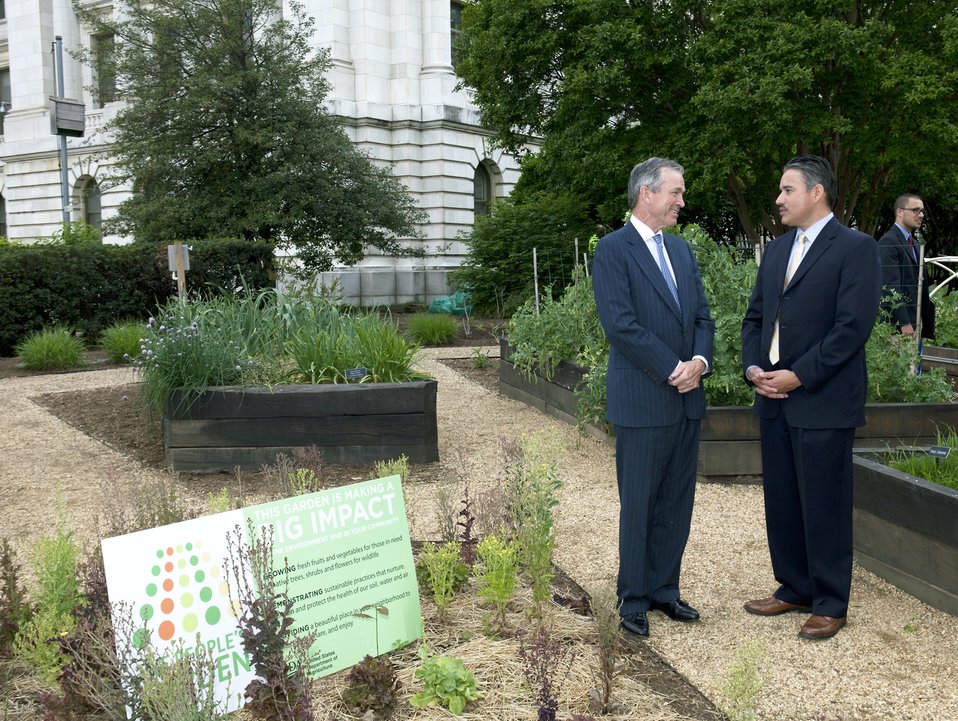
Agriculture Deputy Assistant Secretary for Administration Oscar Gonzales Jr. (right) and Keep America Beautiful (KAB) President Matthew McKenna stand in the People’s Garden at the U.S. Department of Agriculture, Whitten Building in Washington, D.C., on Thursday, April 25, 2012 discussing the People’s Garden Initiative. The Initiative’s success is due to the support of partners like KAB who are working towards the same goals. KAB’s national affiliates have established 600 of the nearly 1700 People’s Gardens in a multitude of diverse American communities.